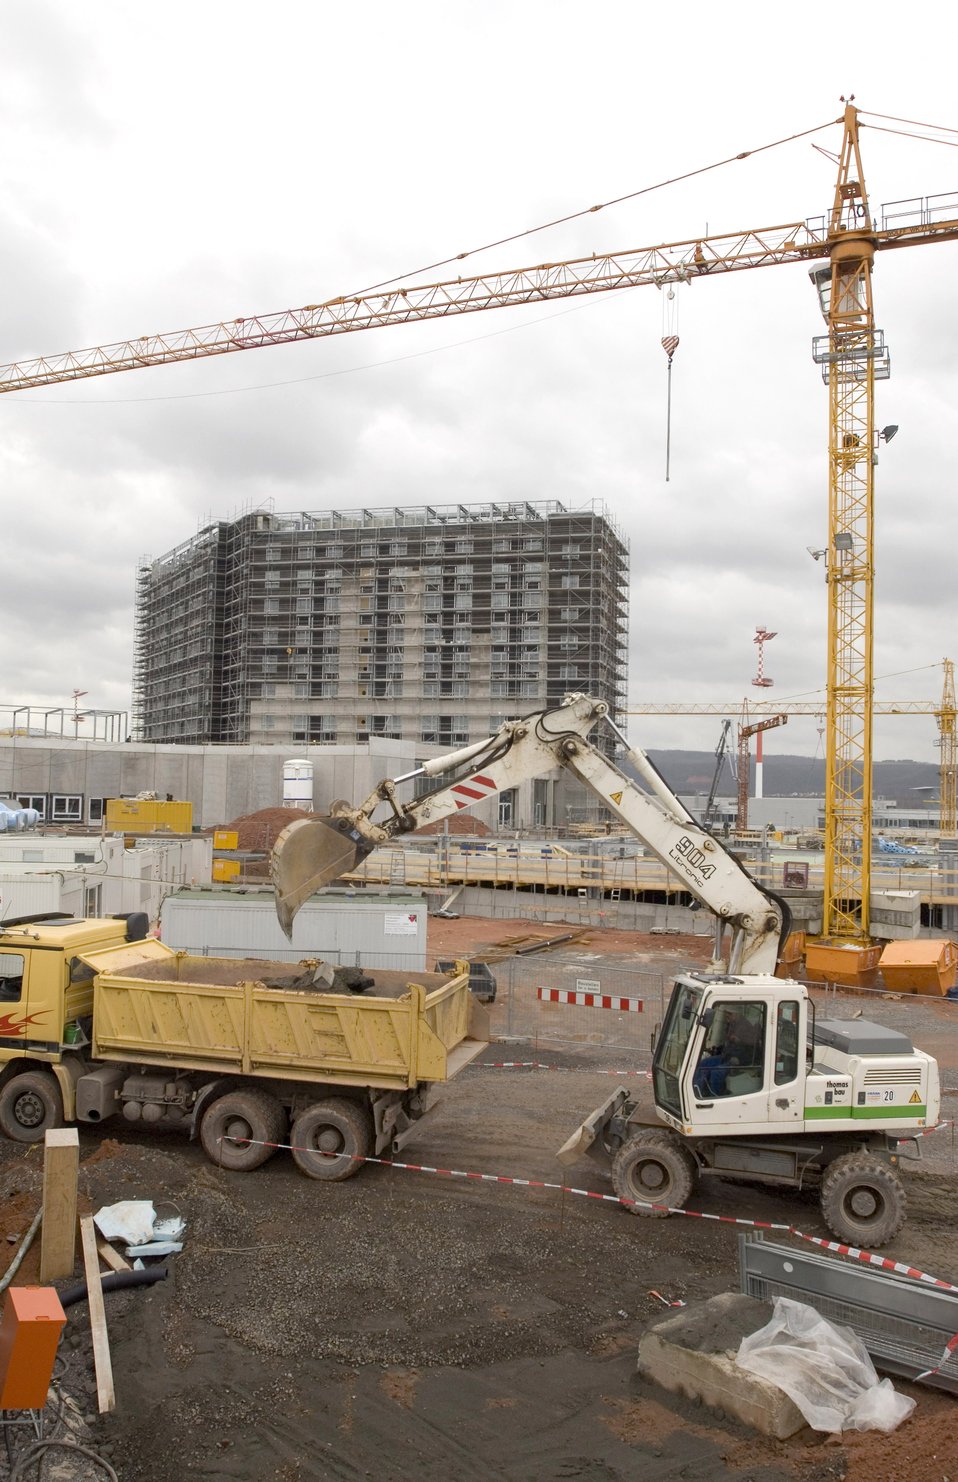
Transformation at Ramstein

The hotel stands tall over the Kaiserslautern Military Community Center's construction site at Ramstein Air Base, Germany, on Tuesday, March 28, 2006. The 350-room visitors billeting is slated to open in September and the shopping mall in early 2007.